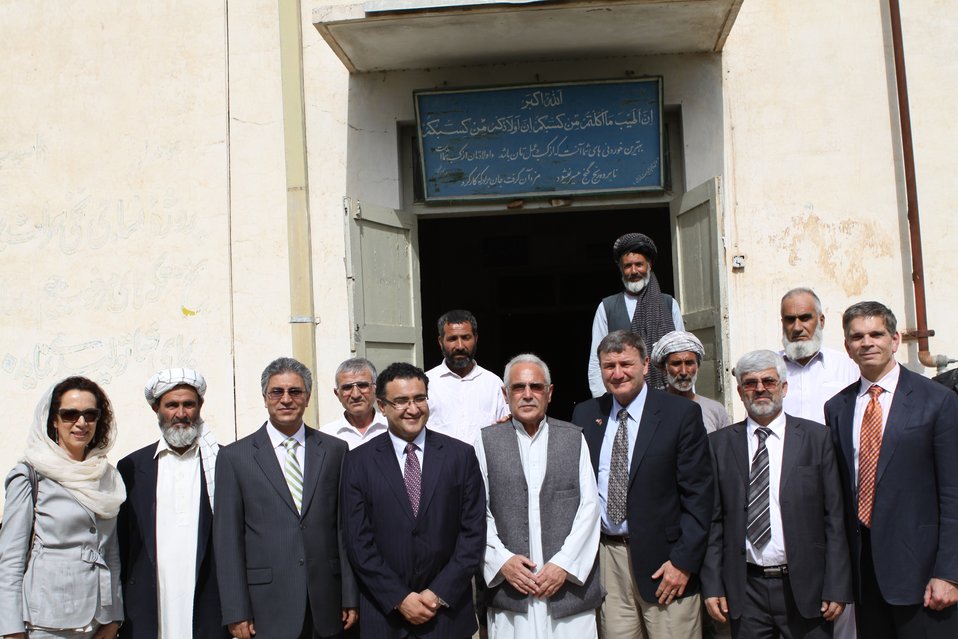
100525 Hirat Textile Company 787